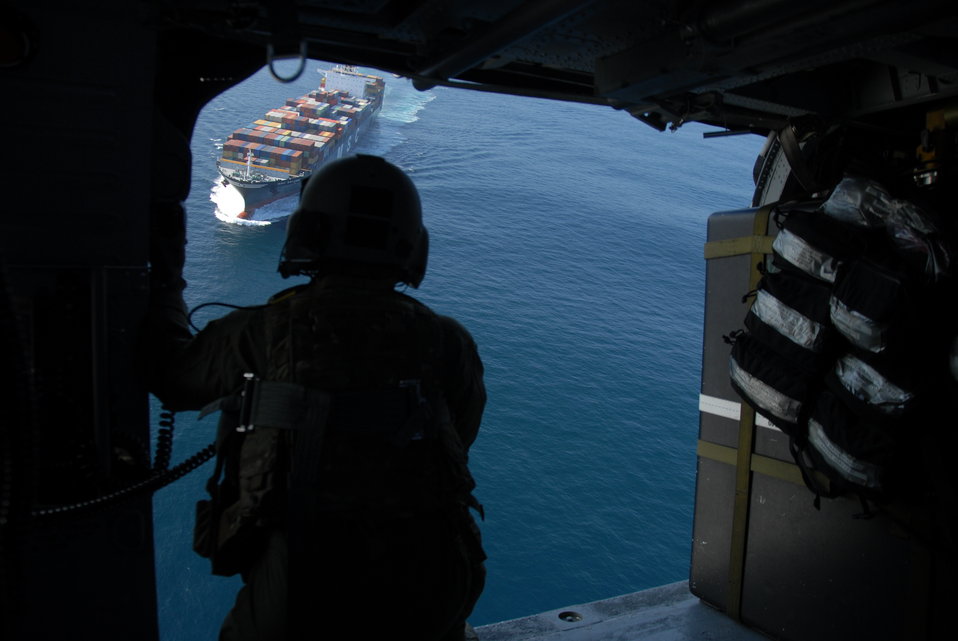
Ready to rescue

Staff Sgt. Michael Wang watches for the pararescueman aboard MSC Beijing to signal for pick up 200 miles off the coast of California on Feb. 4, 2012. The 129th Rescue Wing, out of Moffett Federal Airfield, Calif., provided medical assistance to a 54-year-old male who had suffered stroke-like symptoms on the cargo ship. Wang is an aerial gunner assigned to the 129th Rescue Squadron.